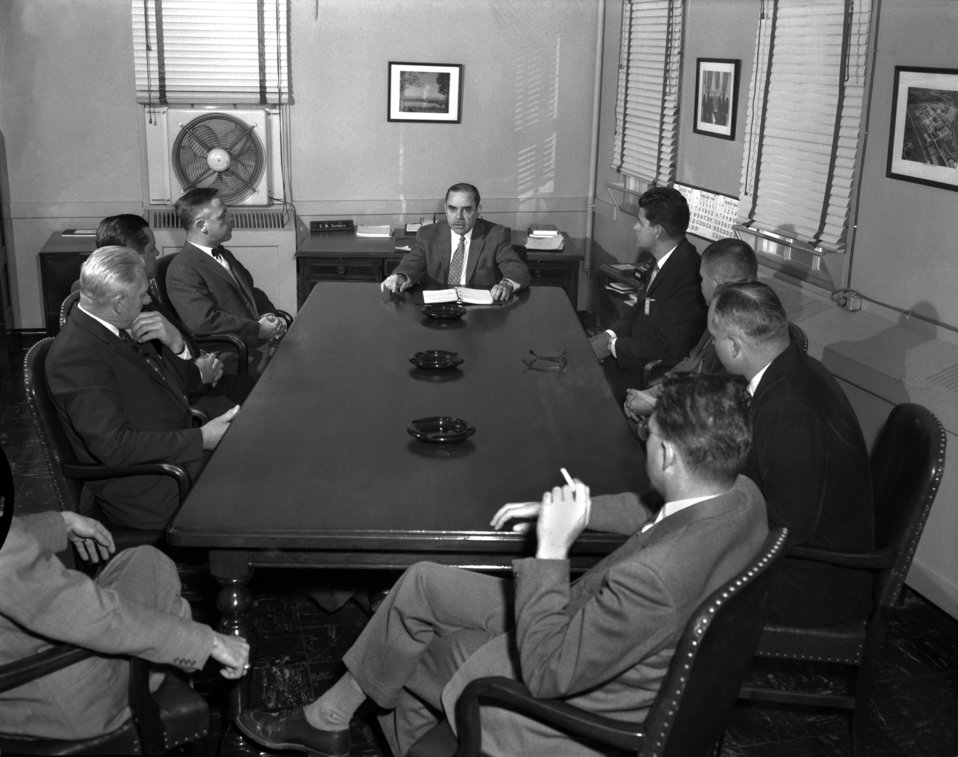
Manager's Office Sapirie and Crew Oak Ridge

60-0090 DOE photo by Ed Westcott

AEC Adm. Bldg. Oak Ridge Tennessee 2/8/1960